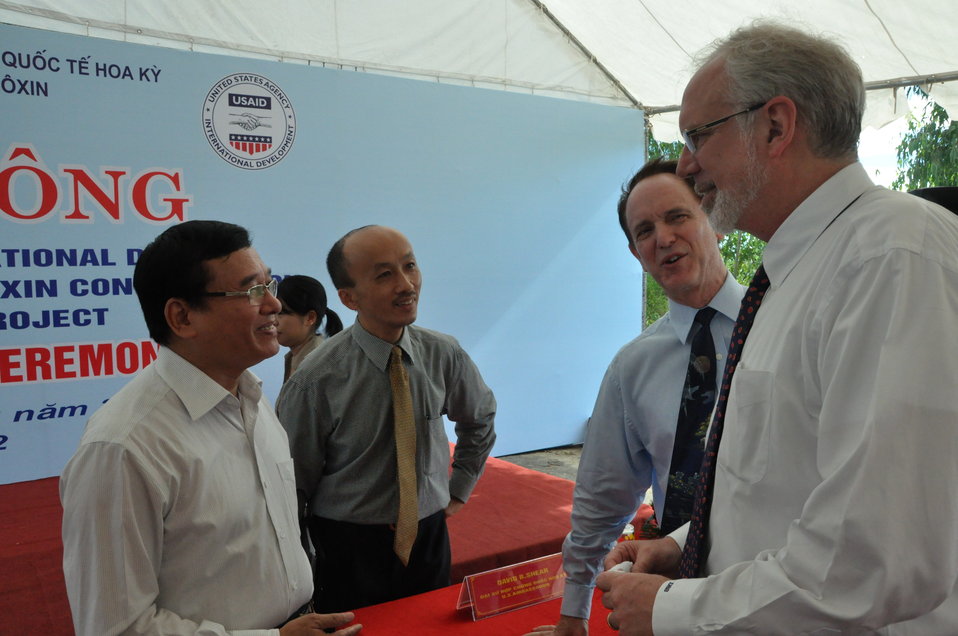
Environmental Remediation of Dioxin Contamination at Danang Airport Project Launch

Danang, August 9, 2012